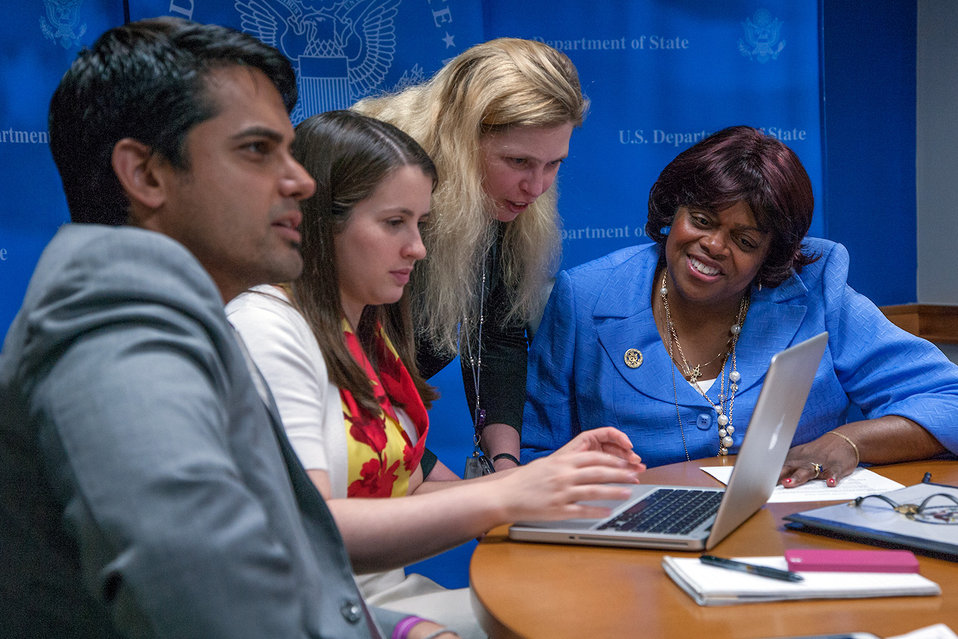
Ambassador Johnson Cook Participates in a Facebook Chat

Ambassador-at-Large for International Religious Freedom Suzan Johnson Cook participates in a Facebook chat at the U.S. Department of State in Washington, D.C., on may 20, 2013.